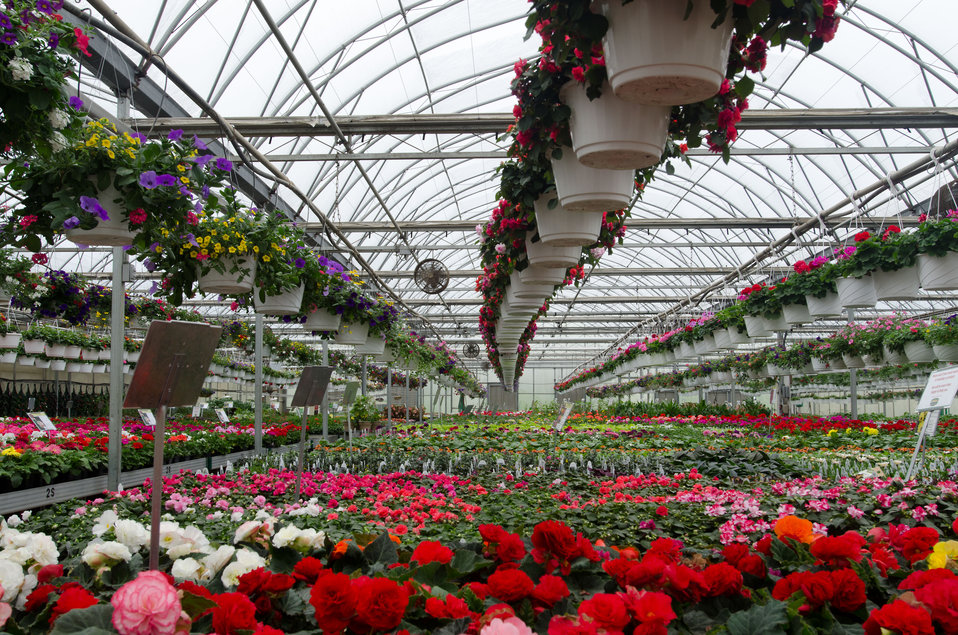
Good Harvest Farm on April 19, 2011 in Strasburg, PA, completed Rural Energy for America Program (REAP) grant supported renovation six months ago that replaced an 80-year old structure with a new 4,000 sq. ft. facility that features energy efficient glass roof with curtains that block or trap heat, radiant heaters in or above the floor, and the replacement of an oil-fired hot-air furnaces with propane fueled boilers that supply fin-tube and cement embedded tube elements with hot water. With current fuel prices, there is a projected 2011 energy cost savings of more than $20,000; a 40% reduction in energy costs – exceeding projected savings. Plant health and quality has improved and been more consistent because the temperature and humidity is computer controlled and distributed evenly throughout the facility. Utilizing sensors and a roof mounted weather station the system can maintain four different climate zones 24-hours a day. Two 1,000,000 BTU propane fueled boilers heat the water to 190 degrees for the 8,000 feet of fin-tube heating elements were used where the original foundation, and the 8,000 feet of tubing that was embedded in a new cement foundation. After traveling through the energy efficient system, water only looses 20 degrees. When temperatures become to hot, motorized roof vents open to allow rising heat to escape; a 98% energy savings from massive fans that previously forced air out. Both systems create a microclimate in and round the plant trays in the growing and sales room. Representing Good Harvest Farm Chris Powell says, “You don’t need to have a lot of land to have a lot of green houses. There are places in cities where vegetables are grow on store roof tops and selling them below in the same structure.”